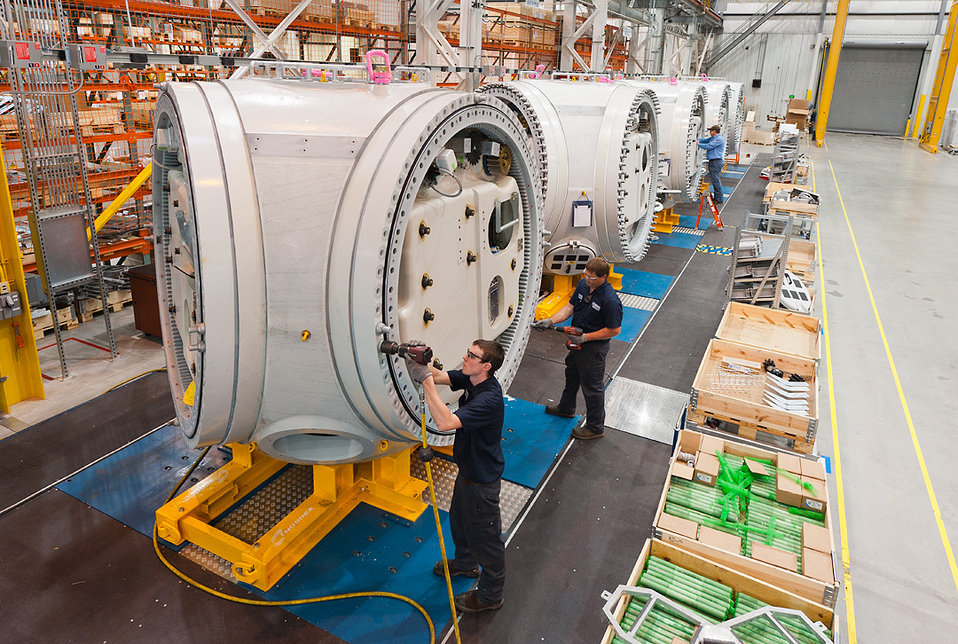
Nordex USA manufacturing facility - Jonesboro, Arkansas.